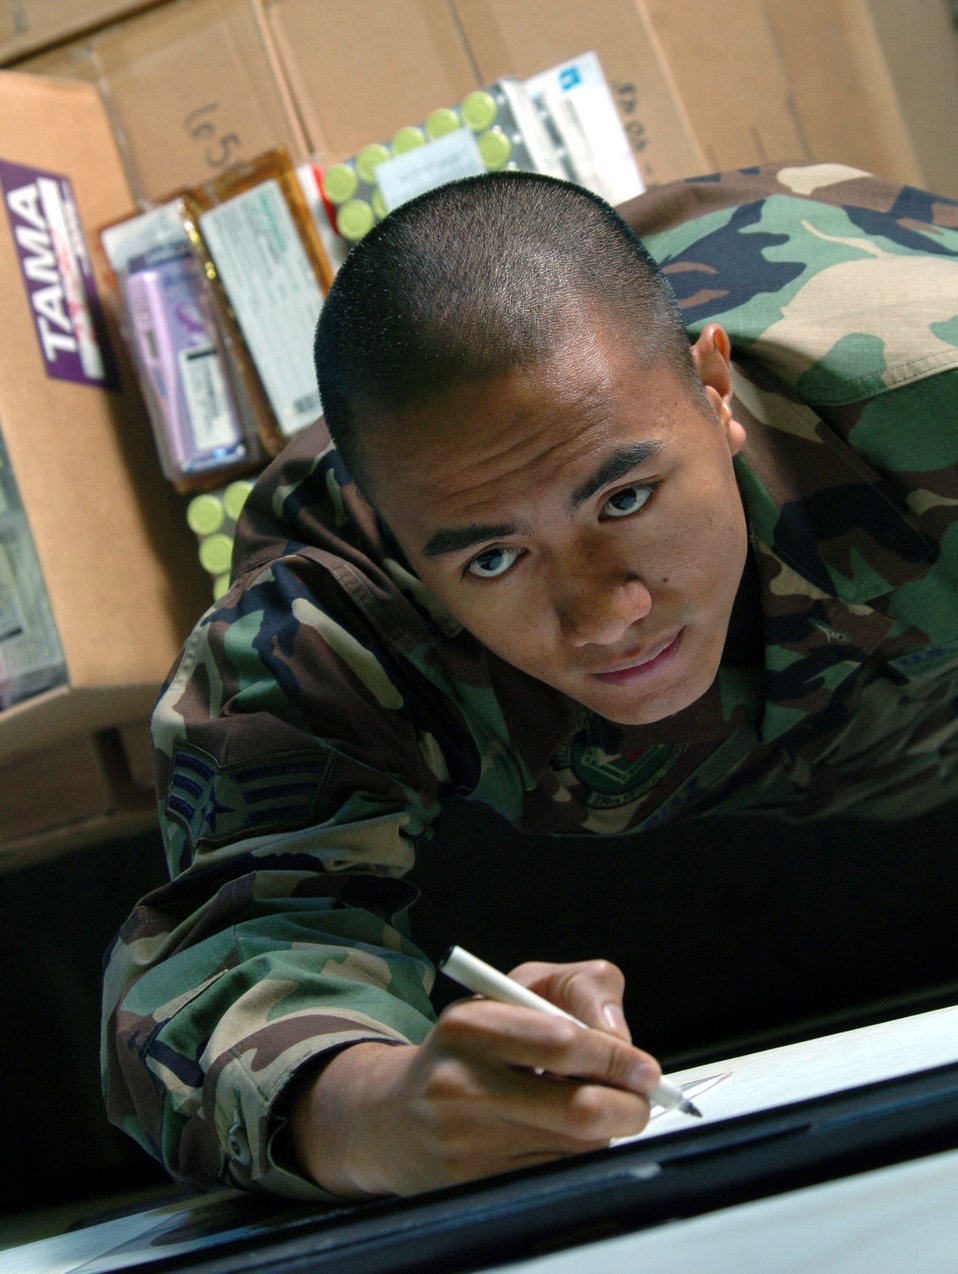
Airmen ensure medical lifeline in Pacific

Yokota Air Base, Japan -- Senior Airman Al Diaz fills out the inventory sheet of war reserve materiel equipment here during an inspection. Airman Diaz is a medical logistics technician from the 374th Medical Group.